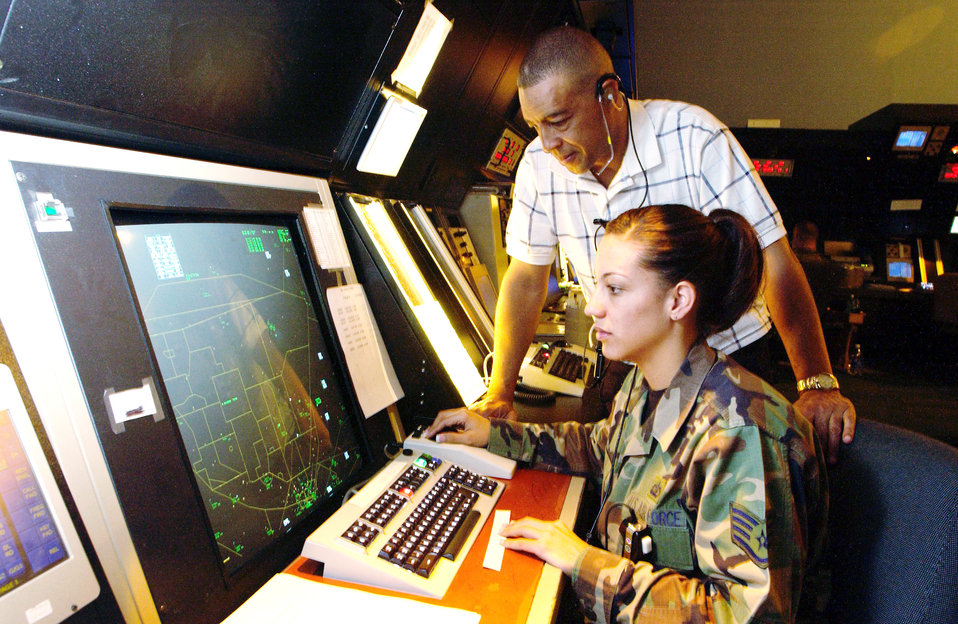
Two generations of air traffic controllers keep Nellis sky safe

NELLIS AIR FORCE BASE, Nev. -- Retired Chief Master Sgt. Tom Miller looks over his daughter's shoulder, Staff Sgt. Deniece Miller, as they view a radar screen at the air traffic control facility here. They are assigned to the 57th Operations Support Squadron here.